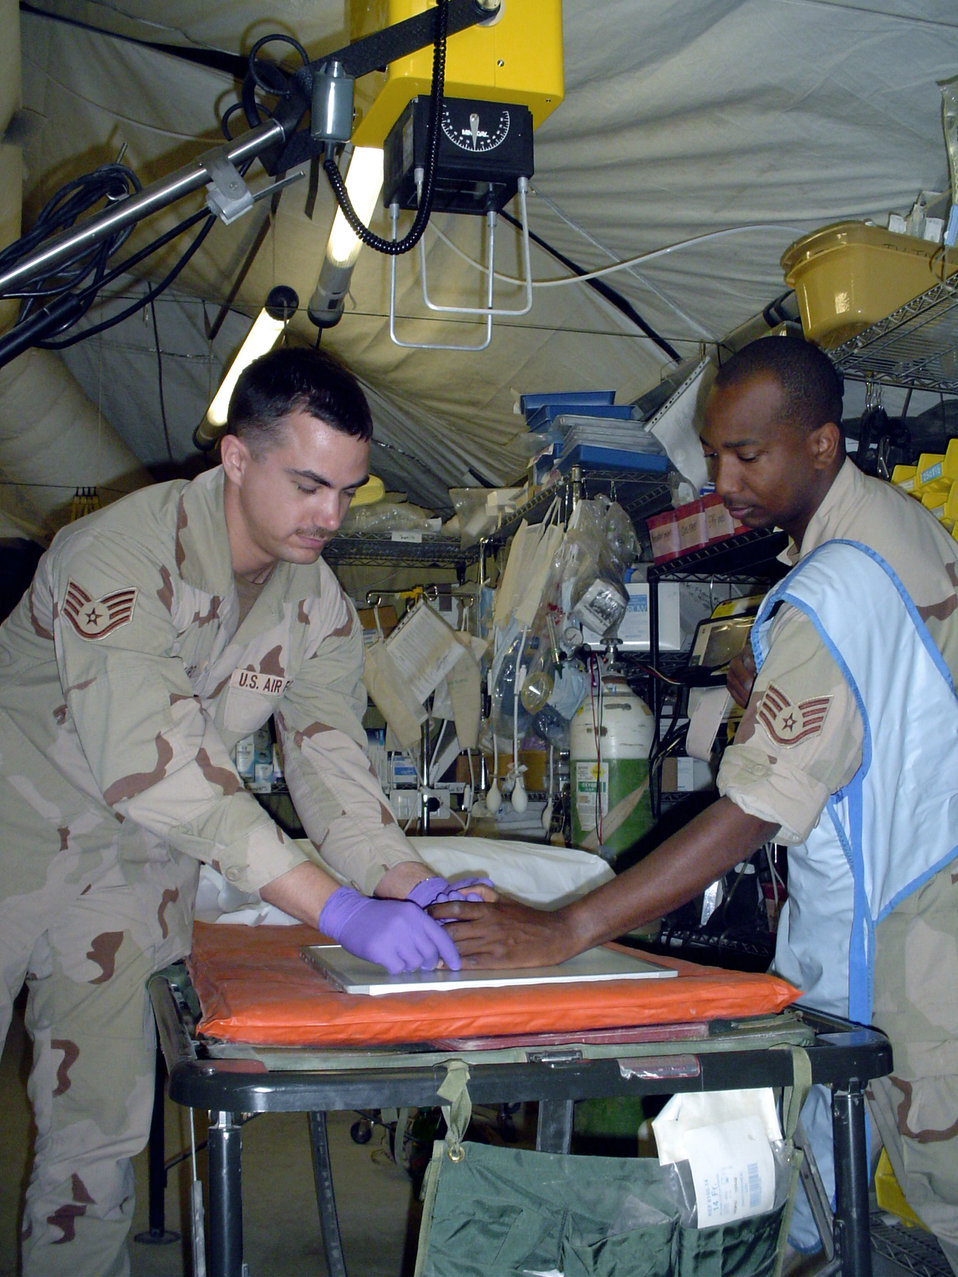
Multifaceted care

CAMP SATHER, Iraq -- Staff Sgt. Dan Schiro (left) sets up an X-ray shot of Staff Sgt. Fitzroy Munroe's hand using a field portable X-ray unit. Sergeant Schiro is a medical technician with the 447th Expeditionary Medical Squadron. Sergeant Munroe is a dental technician with the squadron.